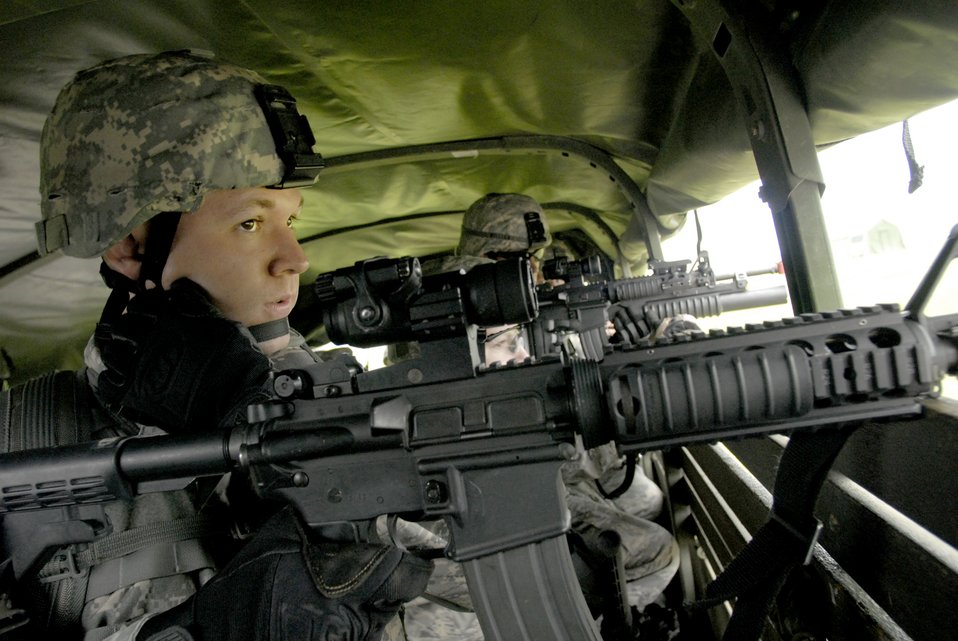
Security forces land navigation exercise

Staff Sgt. Christian Bennett watches for possible hostiles during convoy operations June 14, 2010, at Volk Field Combat Readiness Training Center, Wis. Sergeant Bennett is the fire team leader with the 115th Security Forces Squadron.